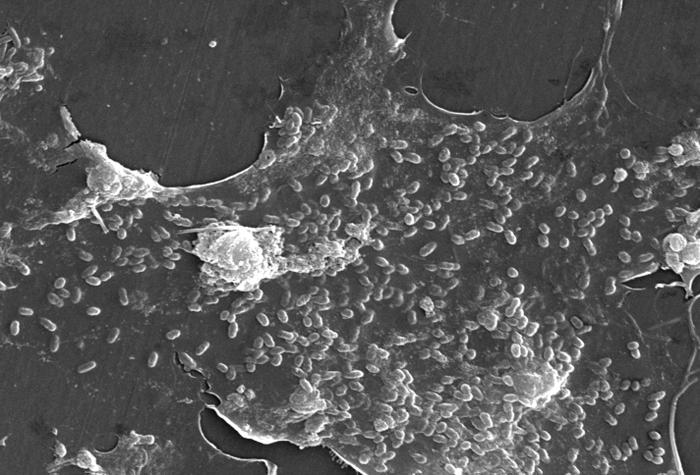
This scanning electron micrograph (SEM) of an untreated water specimen extracted from a wild stream mainly used to control flooding during inclement weather, revealed the presence of unidentified organisms, which included bacteria, protozoa, and algae. In this particular view, a mass of gelatinous biofilm had enmeshed numbers of microorganisms, including amoebae and bacteria. See PHIL 11706 for a colorized version of this image.